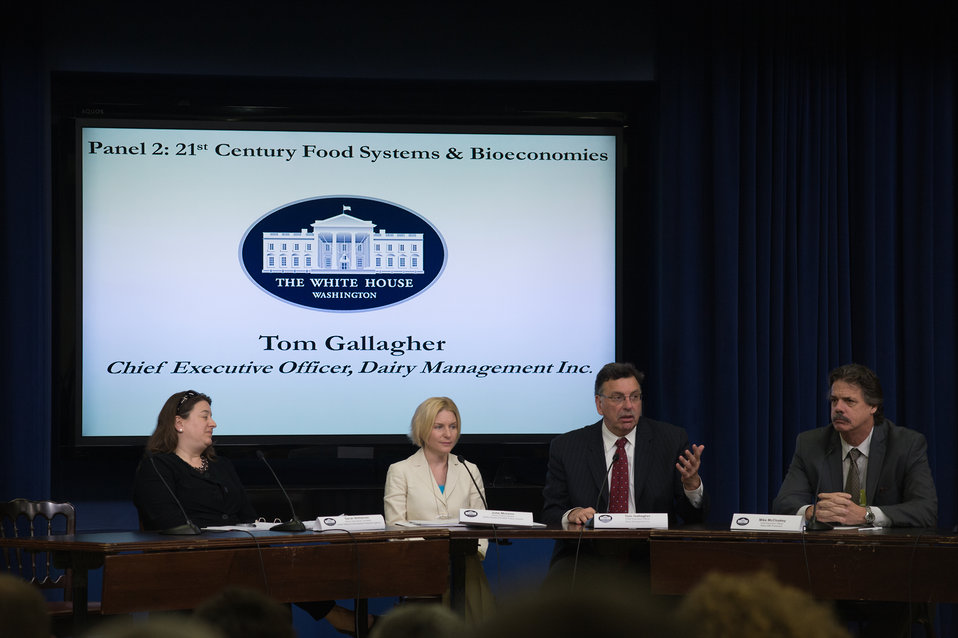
Innovation Center for U.S. Dairy Chief Executive Officer (CEO) Tom Gallagher (second from right) speaks at the Innovation Center For U.S. Dairy Sustainability Council Meeting on Wednesday, Apr. 24, 2013, at the White House, in Washington, D.C.